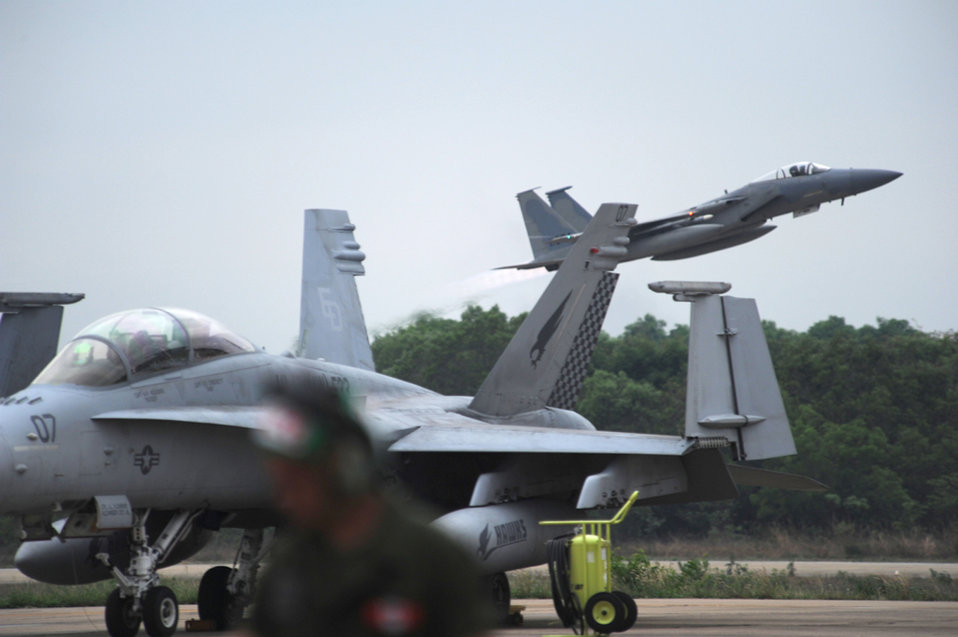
Cope Tiger 2011

An F-15 Eagle assigned to the 44th Expeditionary Fighter Squadron at Kadena Air Base, Japan, takes off March 23, 2011, from Korat Royal Air Force Base, Thailand, behind a parked F/A-18 Hornet assigned to Marine All-Weather Fighter Attack Squadron 533 at Marine Corps Air Station Iwakuni, Japan. The Eagle was flying an exercise mission that was part of Cope Tiger 2011, which runs from March 14 through 25. Participants of Cope Tiger include the U.S. Air Force, the U.S. Marine Corps, the Royal Thai Air Force, Royal Thai Army and the Republic of Singapore Air Force.